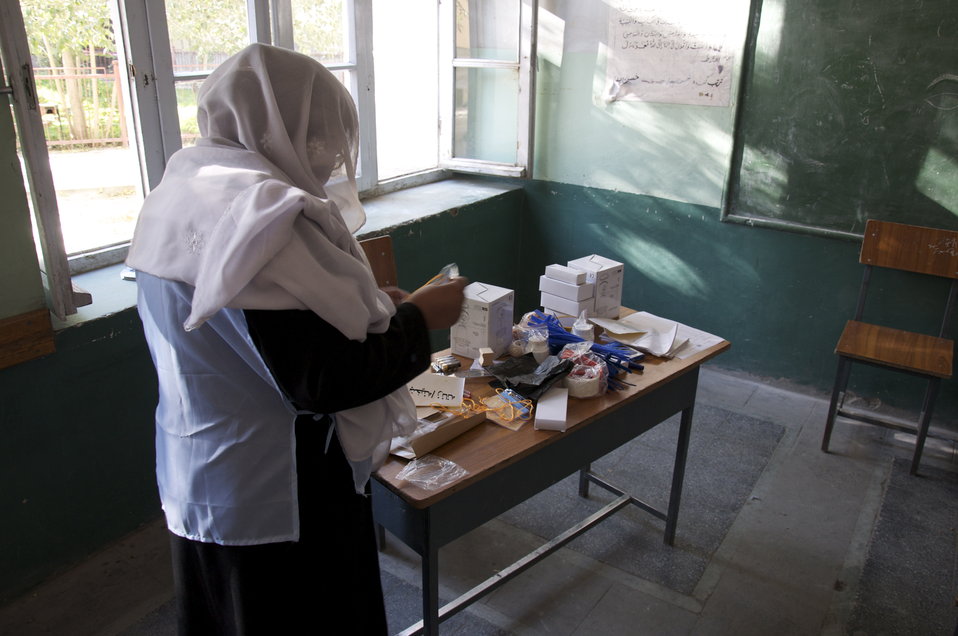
Election Observer